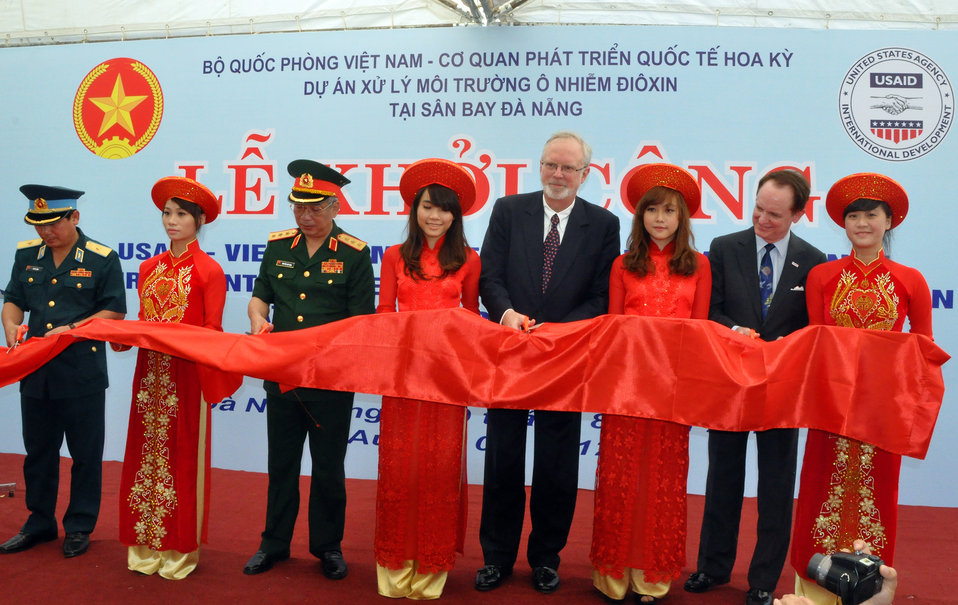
Ribbon Cutting at the Environmental Remediation of Dioxin Contamination at Danang Airport Project Launch

Danang, August 9, 2012